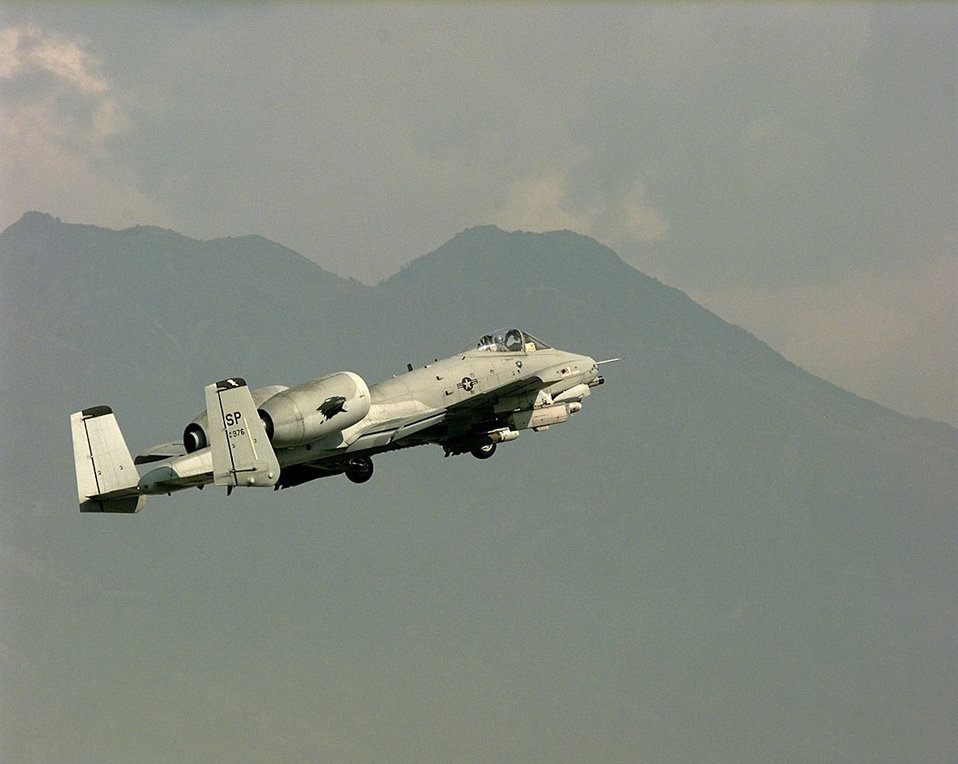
New mission

1990's -- An A-10 Thunderbolt II from the 81st Fighter Squadron, Spangdahlem Air Base, Germany, takes off on a mission against targets in Yugoslavia, April 5, 1999. Members of the 81st Fighter Squadron are deployed to Aviano Air Base, Italy, in support of NATO Operation Allied Force. The A-10 and OA-10 Thunderbolt IIs are the first Air Force aircraft specially designed for close air support of ground forces. They are simple, effective and survivable twin-engine jet aircraft that can be used against all ground targets, including tanks and other armored vehicles.